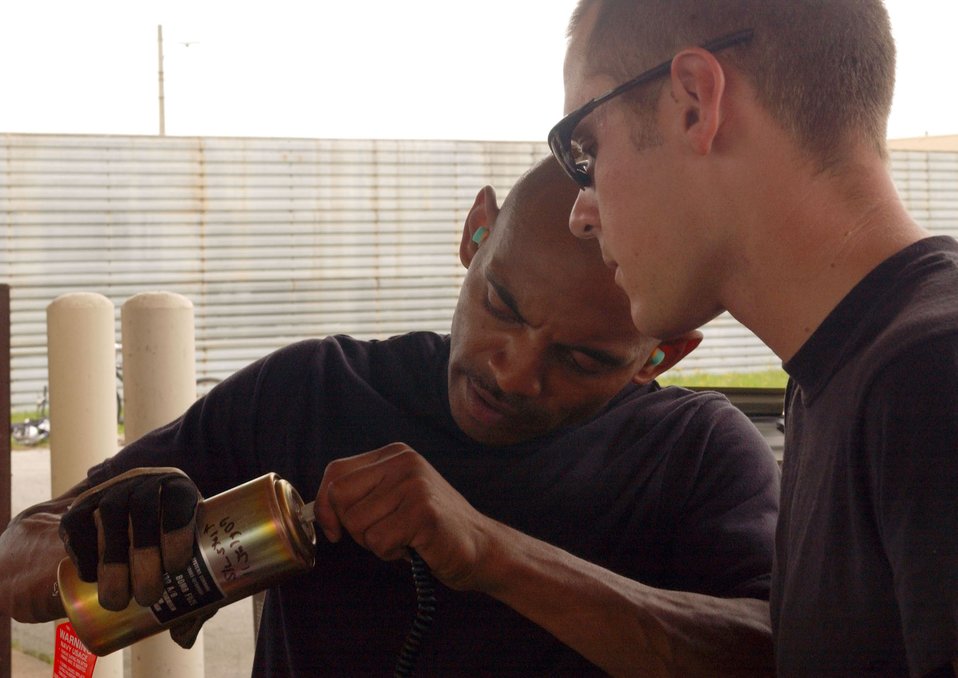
CAPEX underway at Kunsan

Staff Sgt. Robert Thomas (left) shows Airman 1st Class Kale Wenzel how to assemble a fuse July 11 during a combat ammunition production exercise being held at Kunsan Air Base, South Korea. The three-day exercise provides Pacific Air Forces and Air Combat Command units with training in mass munitions assembly in support of aircraft sortie generation. Sergeant Thomas is from the 31st Maintenance Squadron at Aviano AB, Italy, and Airman Wenzel is from the 8th MXS at Kunsan AB.